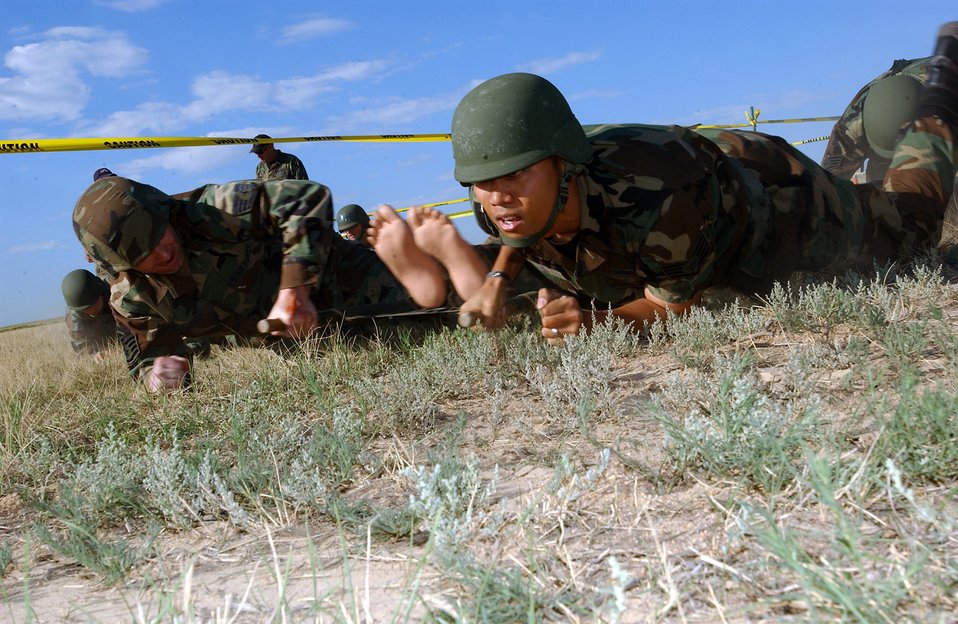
Low crawl

BUCKLEY AIR FORCE BASE, Colo. -- Staff Sgts. Robert Hansen and Jason Banda low crawl with a patient as blank rounds are fired at them as part of a self-aid and buddy care competition Aug. 25. This competition is designed to simulate first aid during wartime conditions.